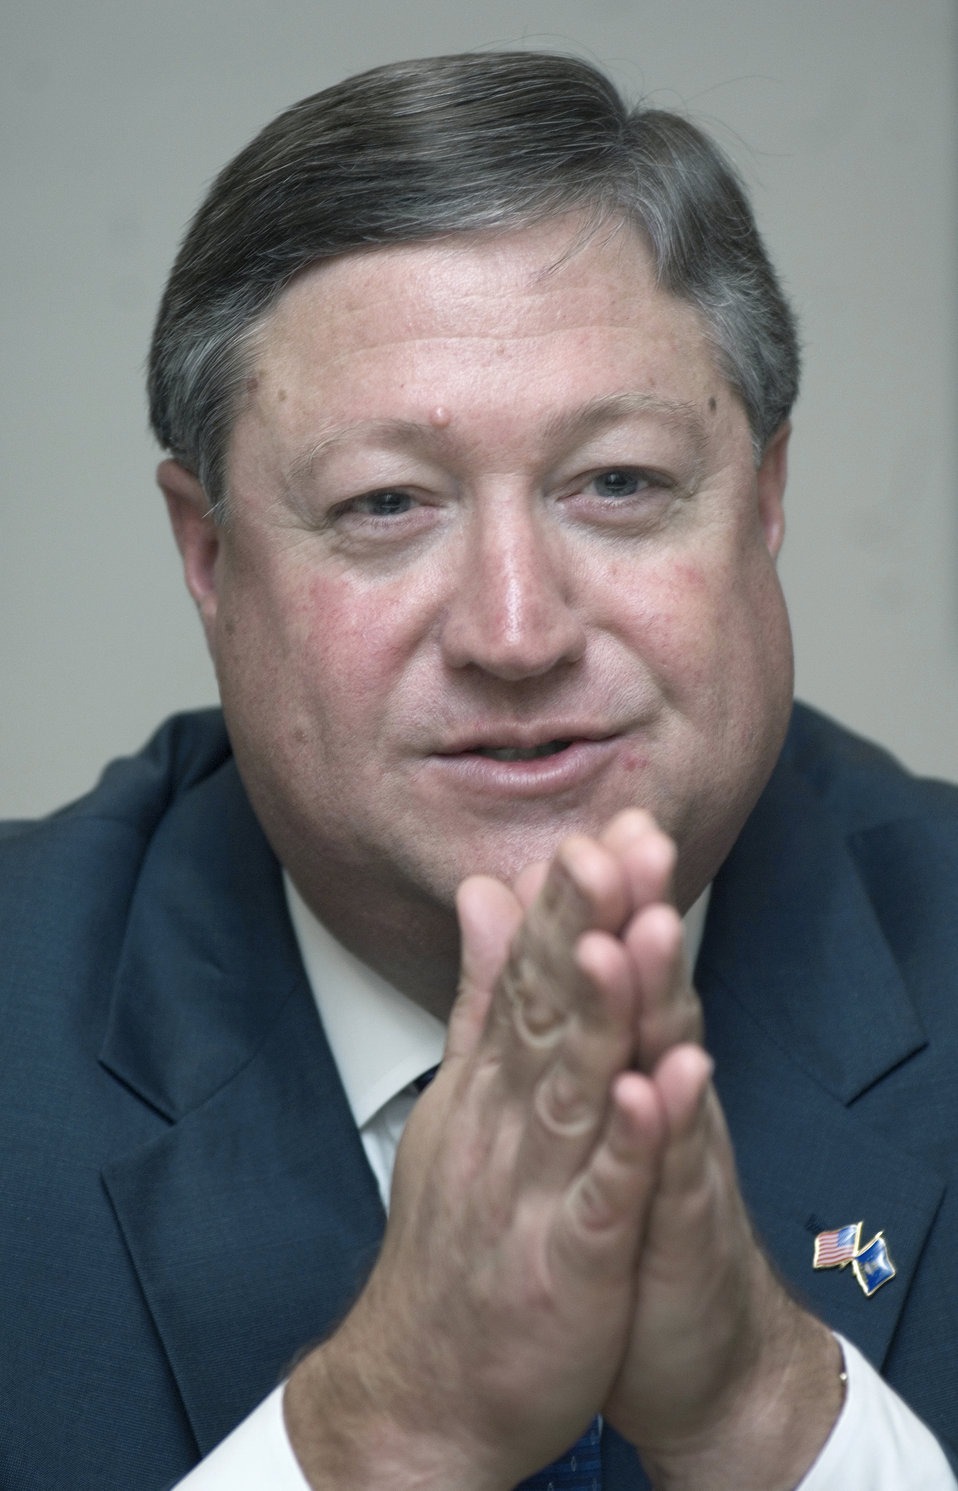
Air Force secretary meets veterans, addresses issues

Acting Secretary of the Air Force Michael B. Donley interacts with community leaders during a Senior Leadership Conference at the Scott Conference Center Aug. 11 in Omaha, Neb. The secretary visited the was participating in Air Force Week in the Heartland, which is designed to broaden awareness of the Air Force's role in the war on terrorism and strengthen support for Airmen serving worldwide in defense of freedom.